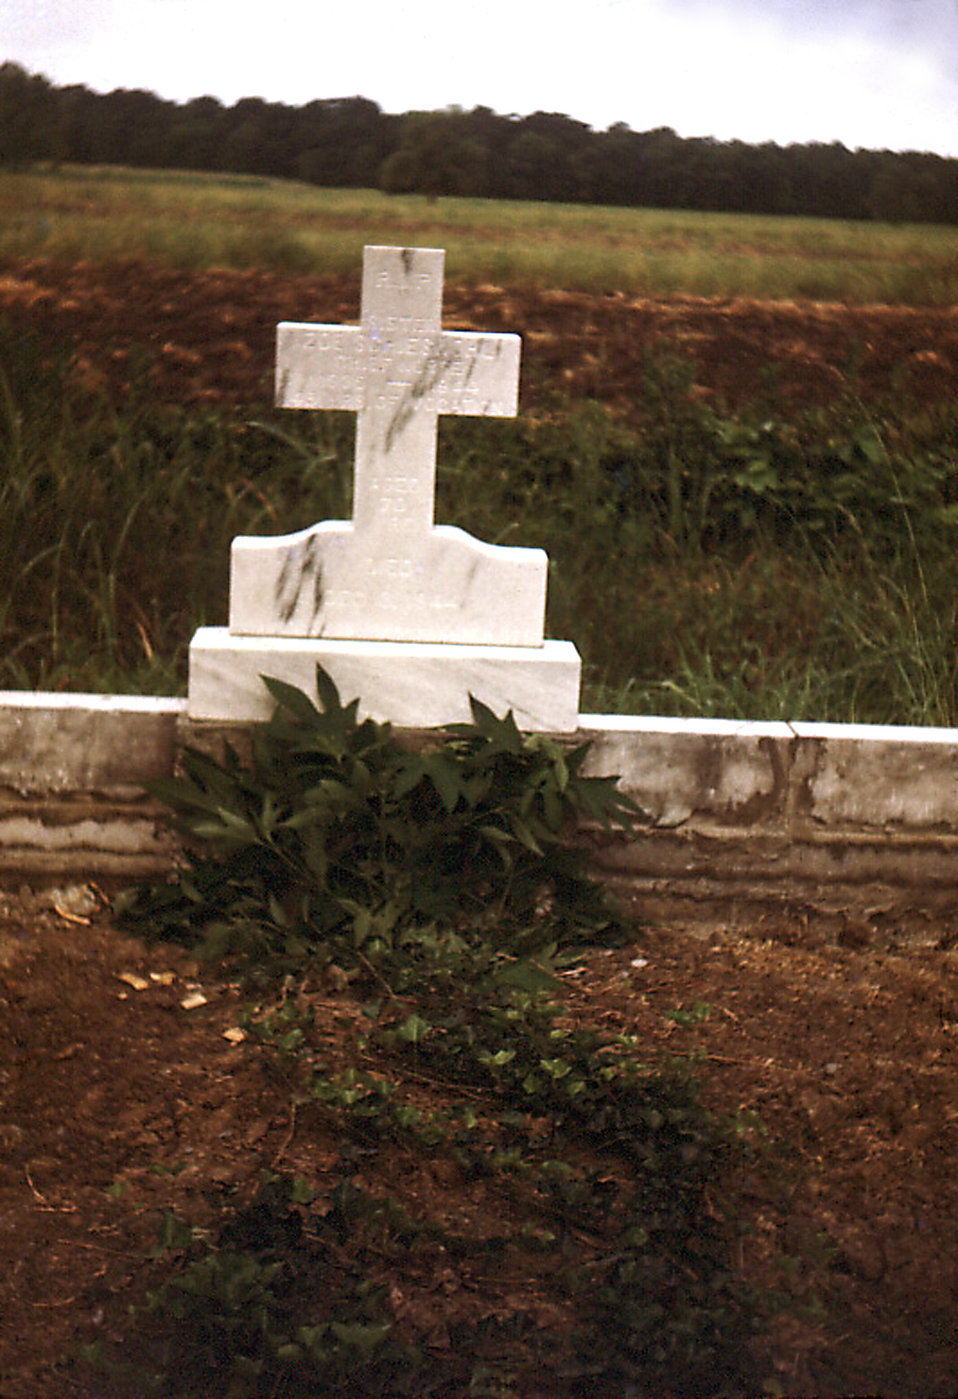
This historic image depicted a the grave site commemorating the passing of the former Carville, Louisiana Leprosarium Head Nurse, Sister Zoe, the only member of the Sisters of Charity to have been buried in the cemetery. It was her request that she be buried amongst the patients whom she'd treated while they were at the hospital. . The hospital was a self-contained compound with its own power plant, storehouse, patient treatment centers, which included a dental office, food-processing facilities, i.e., a cafeteria, and its own cemetery.The National Hansen's Disease Museum's (NHDM) mission is to collect, preserve and interpret the medical and cultural artifacts of the Carville Historic District. In addition, we want to promote the understanding, identification, and treatment of Hansen's Disease (leprosy). We fulfill this mission by creating and maintaining museum displays, traveling exhibits, publications and a website in order to educate and inform the public on all levels.